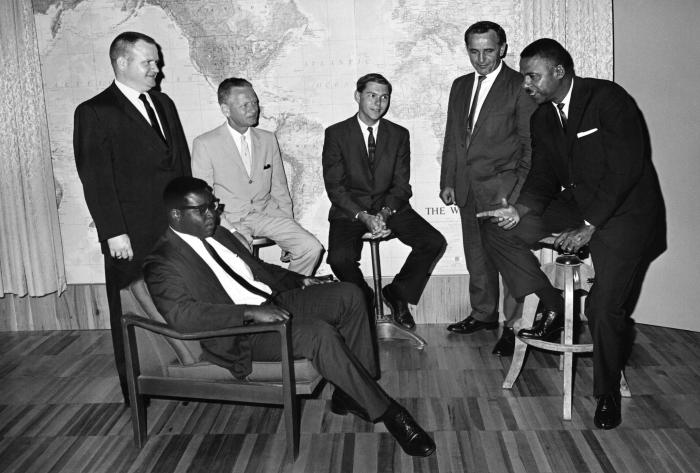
This 1966 image depicted those CDC personnel who were stationed in Nigeria for the Smallpox Eradication/Measles Control Project in that nation. This particular photograph was captured at the Nigerian Region Project Office, which oversaw nineteen western African nations. Left to right were Executive Officer, Mr. James Hicks; Statistician, Mr. Hillard Davis (seated); Executive Officer, Mr. William Des Prez; Deputy Chief, Dr. Ralph Henderson (seated on a stool); Equipment Specialist, Mr. William D. Shoemaker; and at right was Dr. George I. Lythcott, Chief (seated on a stool).